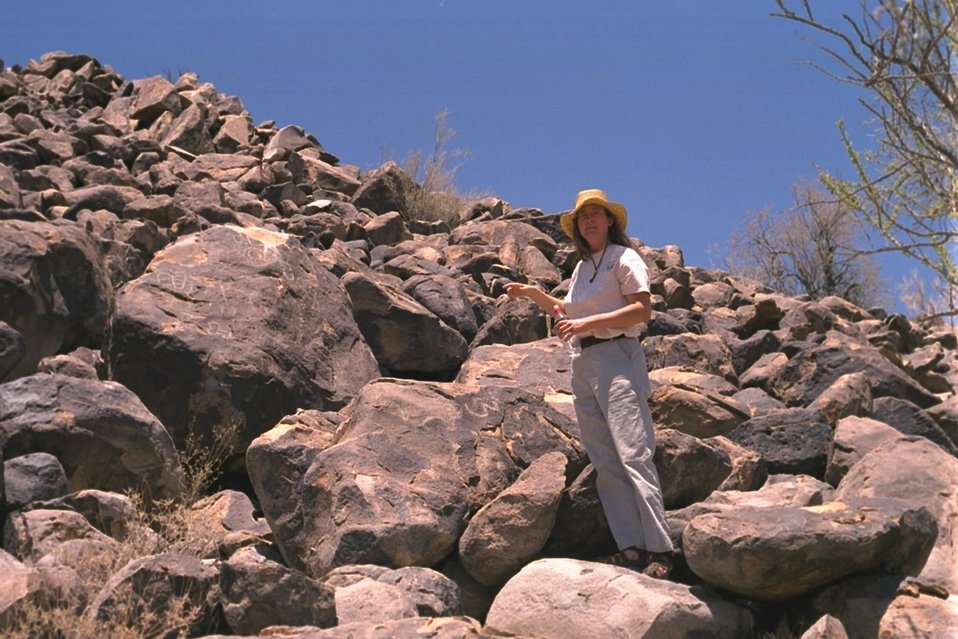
A lady describing the mound of petrogylphs at the Cocoraque Butte Archaeological District. (This site is close to the southern boundary of the monument.)